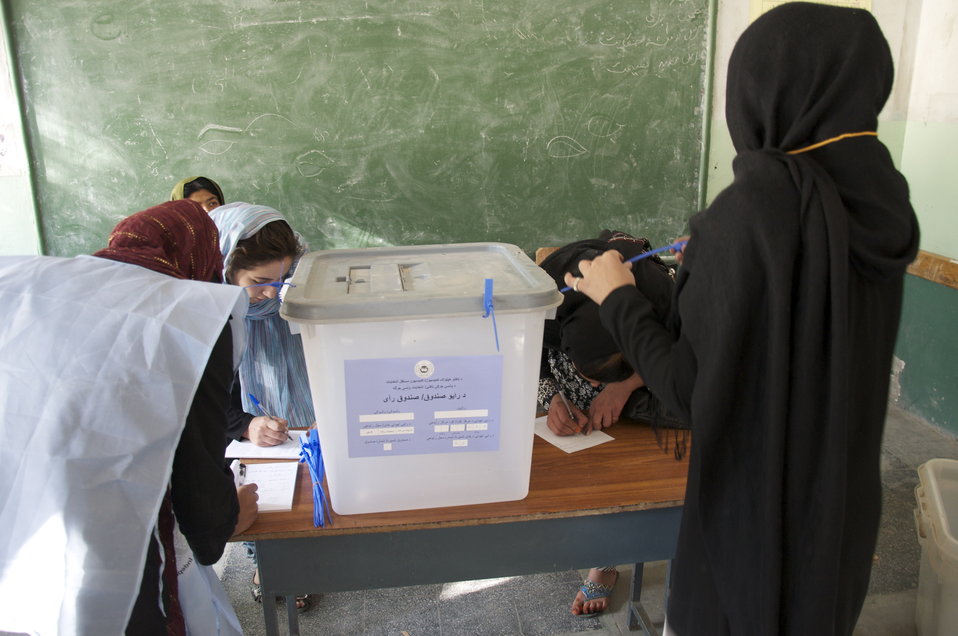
Election Observers